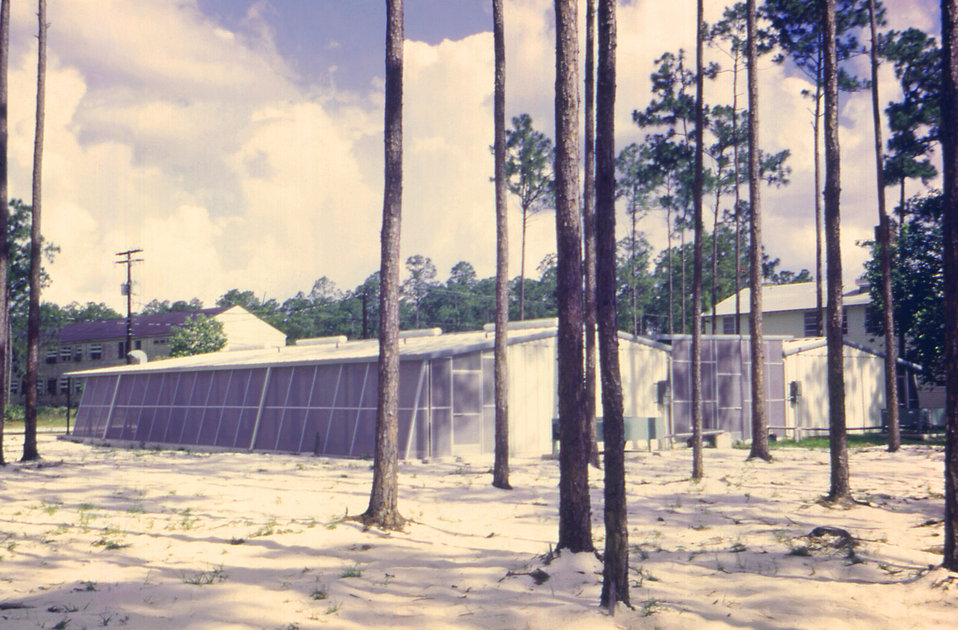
This 1968 image depicts what was an exterior of a Centers for Disease Control (CDC) pesticide testing facility, which was located in Thomasville, Georgia.